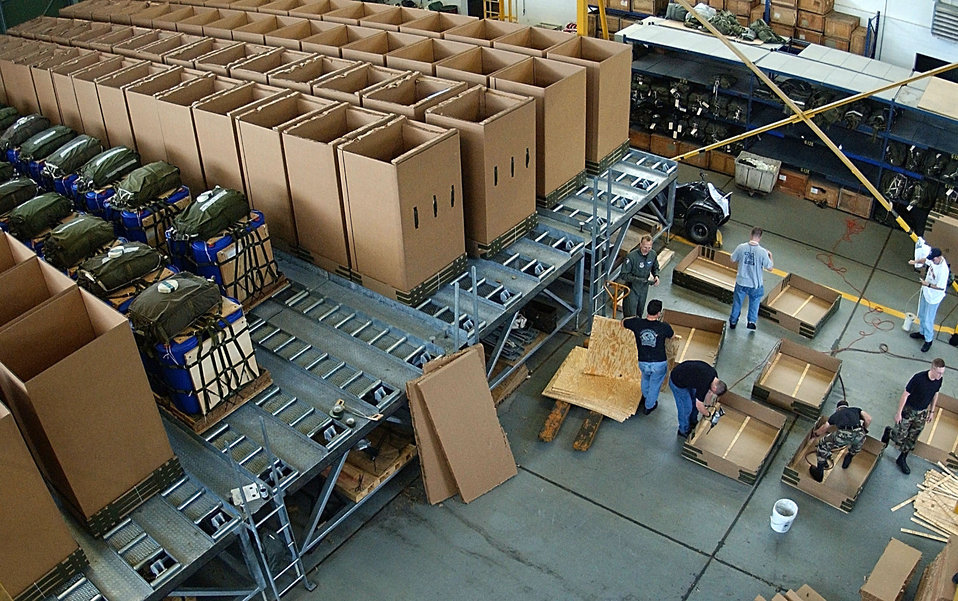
TRIADS

OPERATION ENDURING FREEDOM -- U.S. Air Force people build Tri-Wall Aerial Delivery System (TRIADS) that will hold the Humanitarian Daily Rations. C-17 Globemaster IIIs deliver the HDRs in Support of Operation Enduring Freedom. The C-17s airdrop the HDRs to Afghan refugees who have massed inside the borders of Afghanistan. C-17s can carry more than 35,000 HDR's packaged in 84 TRIAD boxes, measuring 80 inches tall and 48 by 48 inches square, each filled with 420 HDRs.